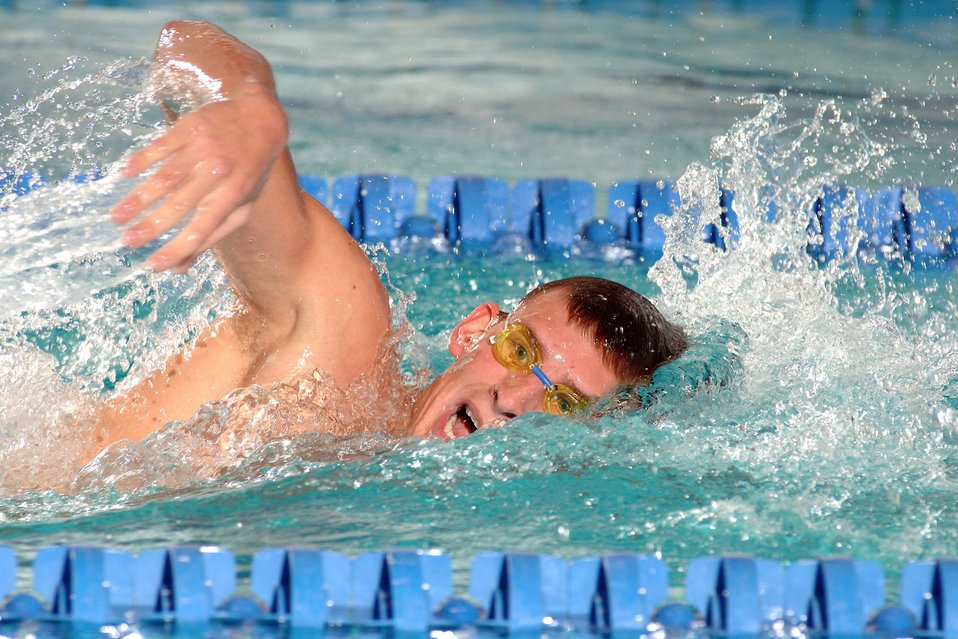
Swimmer of the week

Cadet Chris Knaute was named Mountain West Conference men's swimmer of the week Jan. 24 by the conference office. This is his third honor for this season and seventh of his career for the Air Force Academy senior.